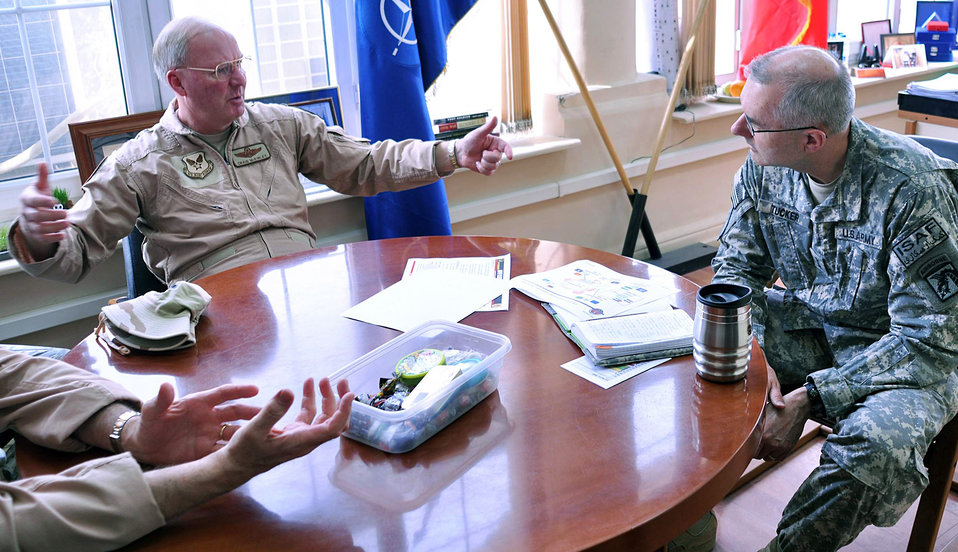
Guard bureau chief sees peacekeeping as likely National Guard mission

Gen. Craig R. McKinley speaks with Army Maj. Gen. Michael S. Tucker in Kabul, Afghanistan, March 2. The generals discussed Army and Air National Guard members serving in Operation Enduring Freedom as well as National Guard-initiated programs being employed. General Mckinley is chief of the National Guard Bureau. General Tucker is the deputy commander for operations for U.S. Forces Afghanistan.